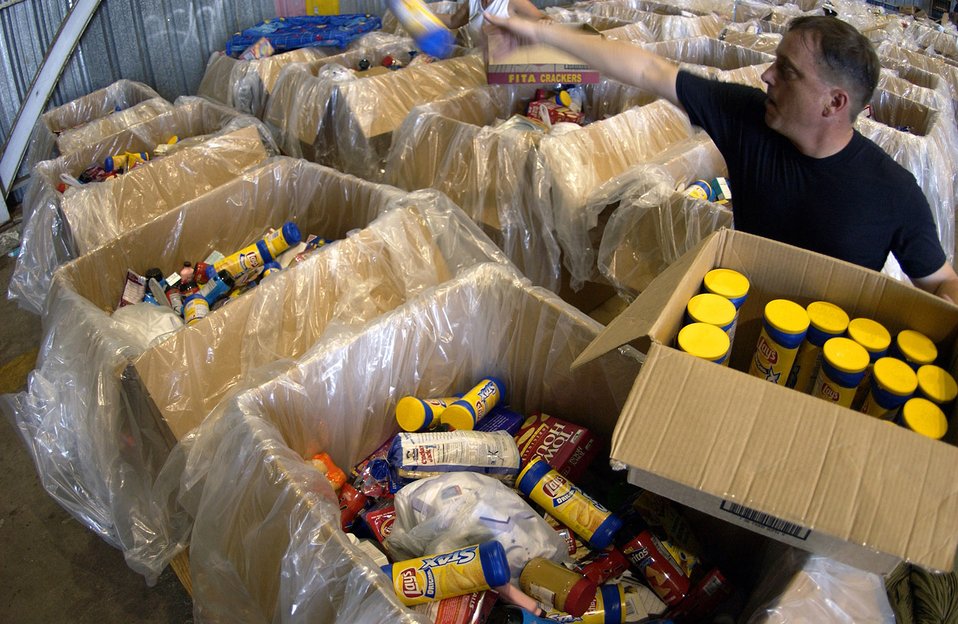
Operation Christmas Drop

ANDERSEN AIR FORCE BASE, Guam (AFPN) -- Senior Master Sergeant Peter Tetreault sorts donated Operation Christmas Drop at a collection center in Hangar 5 here. The donations will be used in this year's Operation Christmas Drop, a 53-year-old tradition. C-130 Hercules aircraft from Yokota Air Base, Japan, flew here today, load up the donated gifts and